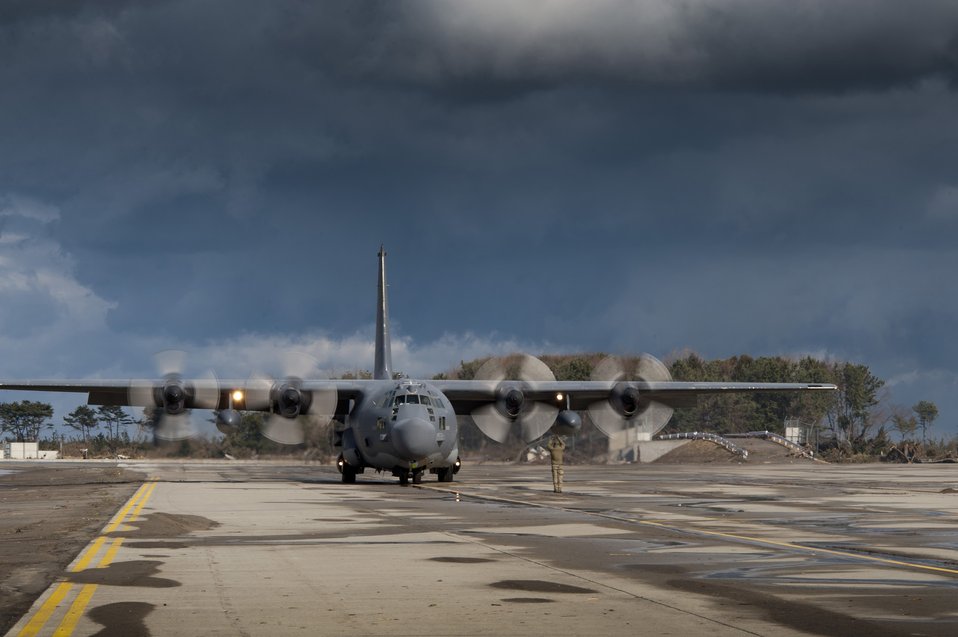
Right this way

A combat controller from the 320th Special Tactics Squadron marshals an MC-130H Combat Talon II March 16, 2011, at Sendai Airport, Japan.